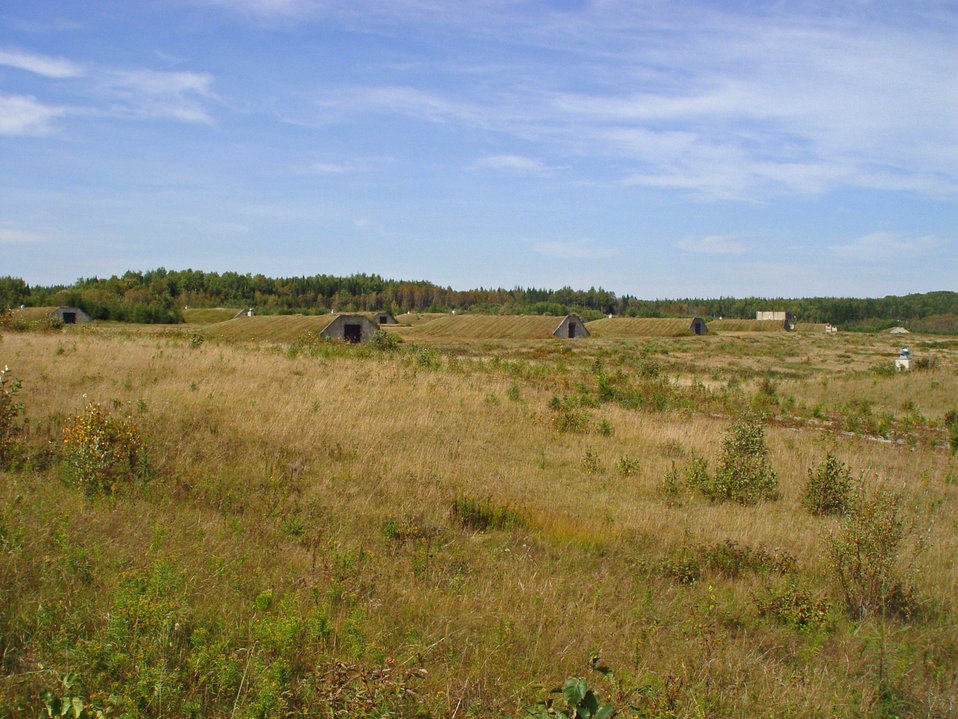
Old bunkers

Aroostook National Wildlife Refuge, ME.